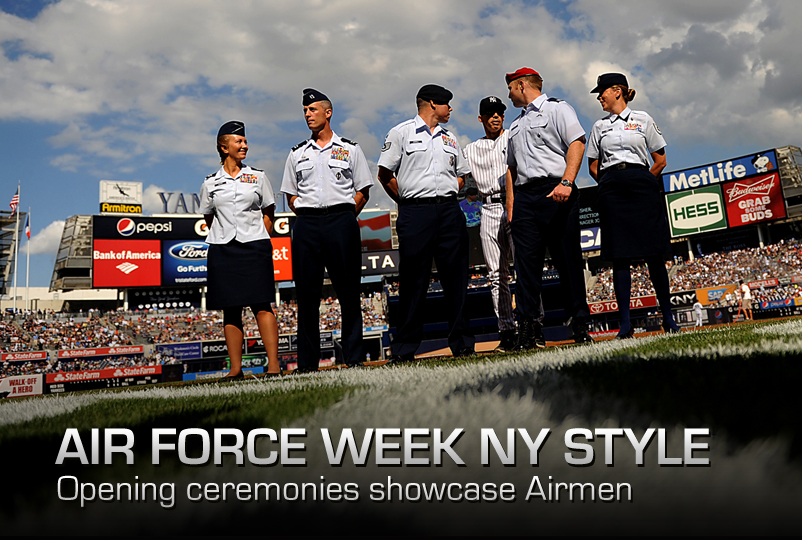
Air Force Week New York Style